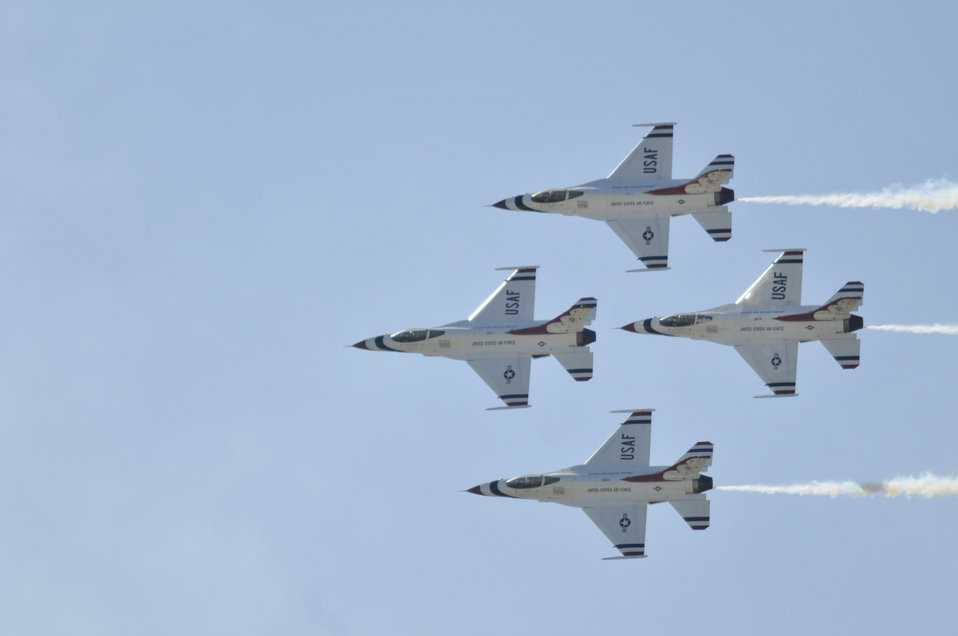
AirFest 2010

The U.S. Air Force air demonstration team, the Thunderbirds, perform precision aerial maneuvers Nov. 6, 2010, during AirFest 2010 at Lackland Air Force Base, Texas.